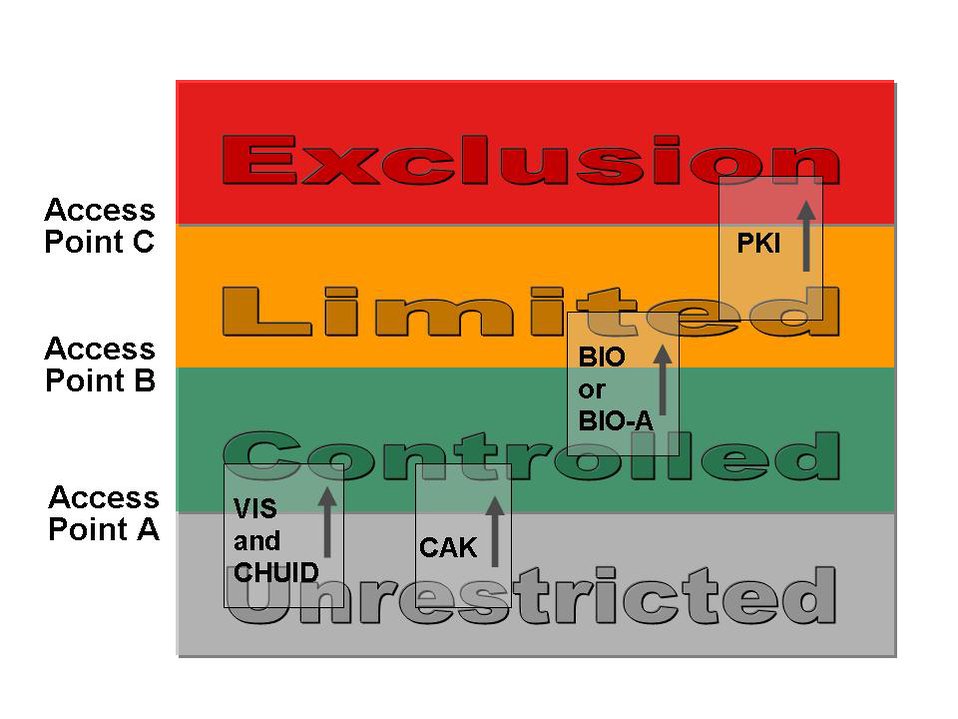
Personal Identity Verification (PIV) card

Four areas of increasing security in a facility (unrestricted, controlled, limited, and exclusion) and recommended authentication methods for passing through access points that separate them, including visual authentication (VIS), Cardholder Unique Identifier (CHUID), Card Authentication Key (CAK), biometric authentication supervised by a human attendant (BIO-A), biometric authentication unsupervised by an attendant (BIO) and Public Key Infrastructure (PKI).